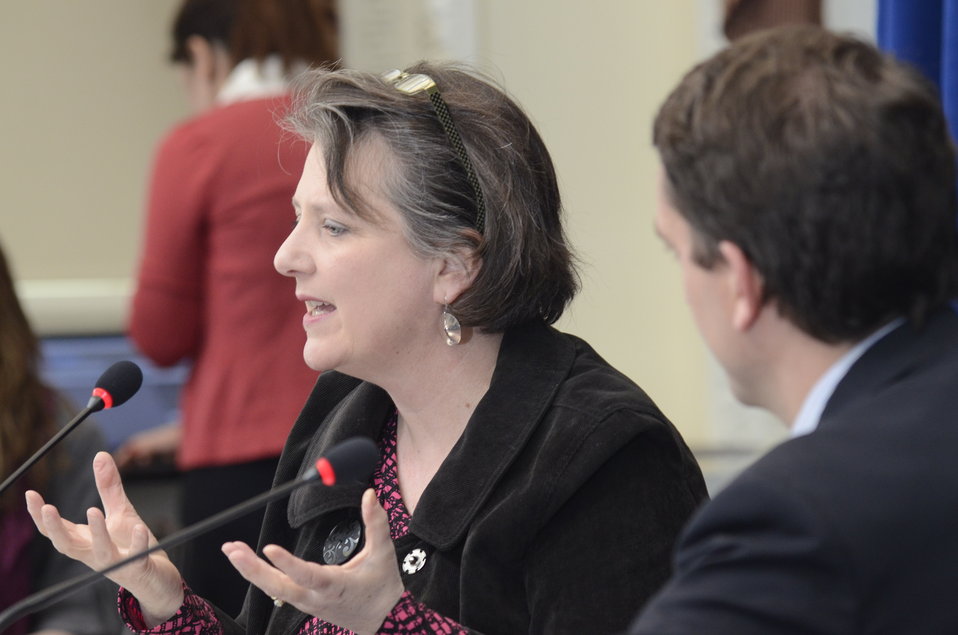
Agriculture Deputy Secretary Kathleen Merrigan and Director, White House Office of Public Engagement Jon Carson, during a Know Your Farmer Compass event that used twitter social media to continue the National Conversation on Local and Regional Food projects and how they offer economic opportunities to local farmers, ranchers and food entrepreneurs. The virtual conversation took place from the White House, in Washington, D.C., on Monday, March 5, 2012.